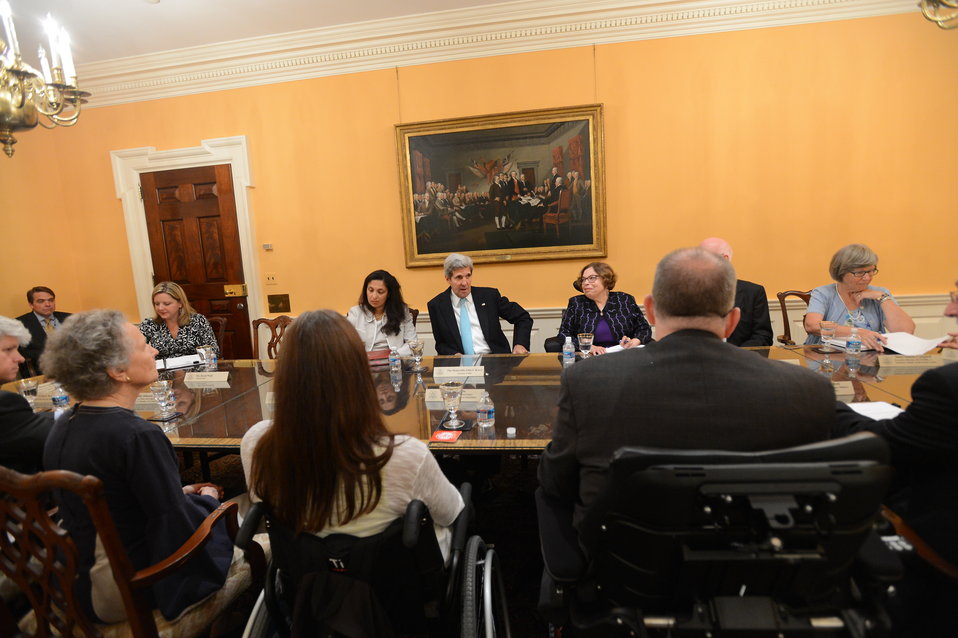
Secretary Kerry Meets With Business, Veteran, Faith and Disability Organization Leaders on the Convention on the Rights of Persons with Disabilities

U.S. Secretary of State John Kerry meets with Business, Veteran, Faith and Disability Organization Leaders on the Convention on the Rights of Persons with Disabilities at the U.S. Department of State in Washington, D.C., on July 23, 2013.